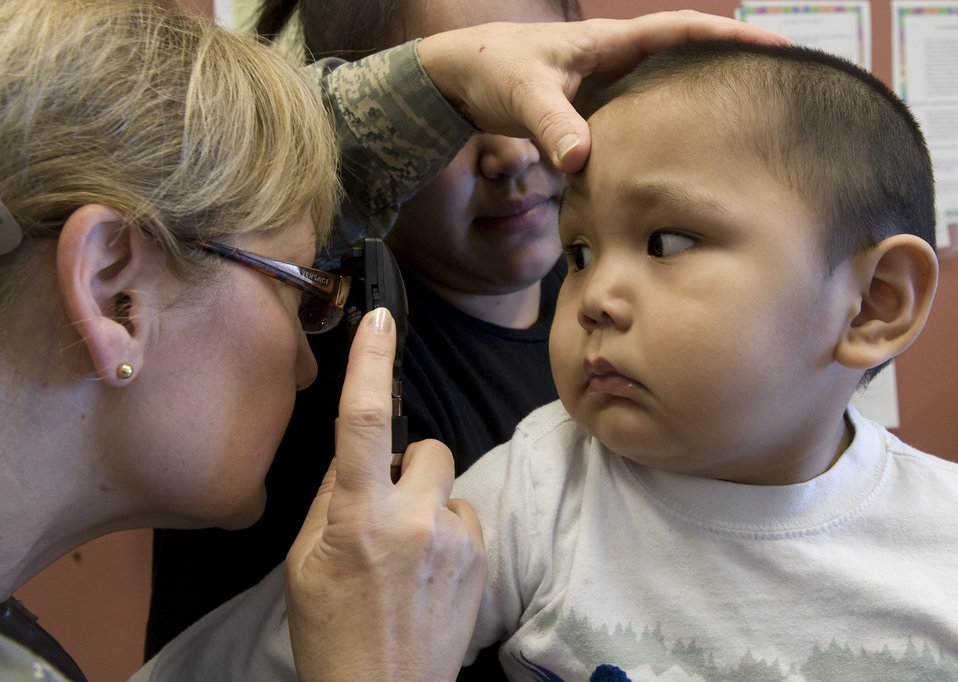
Operation Arctic Care

Maj. Emily Cerreta checks 23-month-old Hikerr Snyder's eyes during his well-baby checkup April 14, 2010, in Noorvik, Alaska. Major Cerreta is a family nurse practitioner from the 433rd Airlift Wing at Lackland Air Force Base, Texas, and is in Alaska for Operation Arctic Care, a joint medical training exercise.